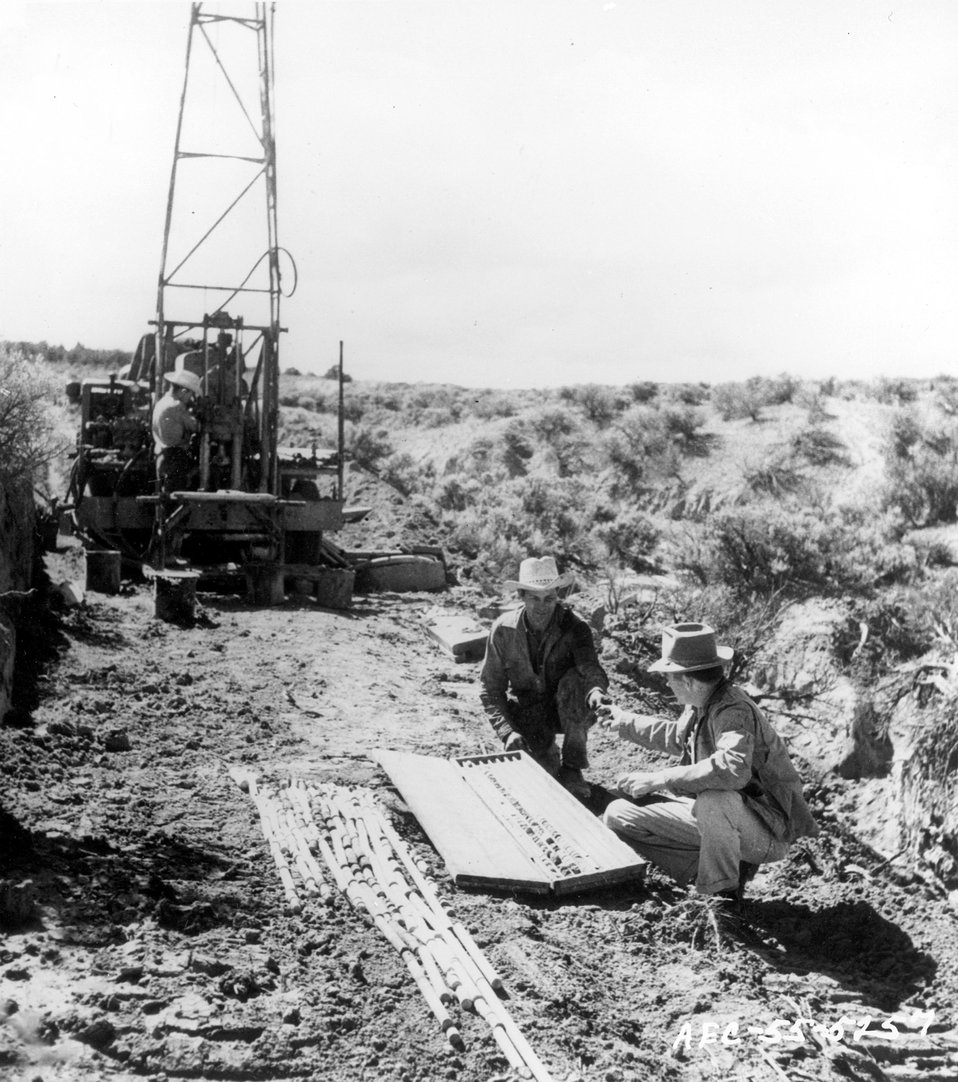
Cores from a diamond-drilling operation for uranium ore are here being examined by a geologist. c. 1955